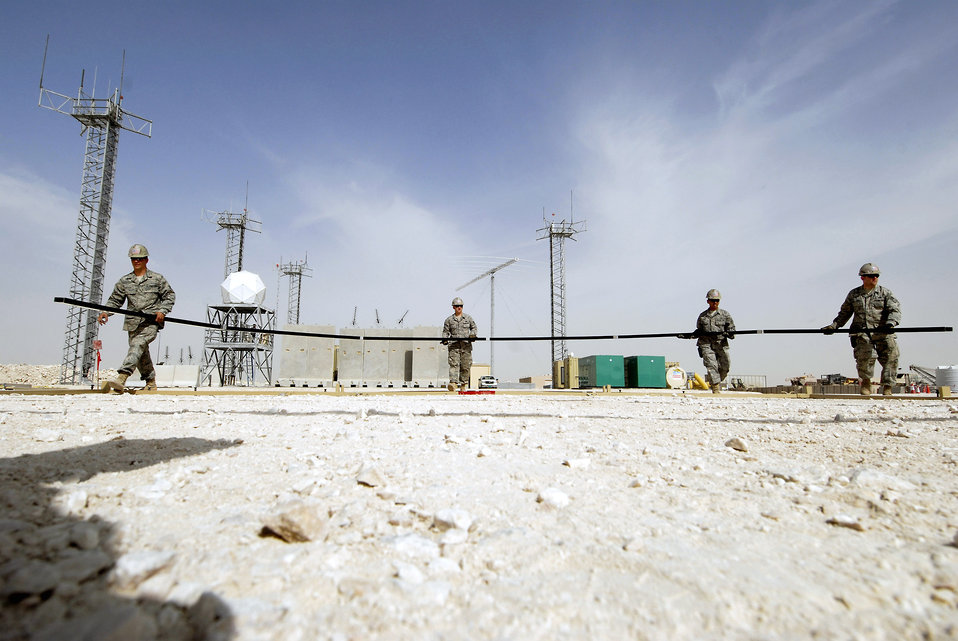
Raising the roof

Structures team members from the 379th Expeditionary Civil Engineer Squadron move the first arch into position Feb. 17 to build a California Medium Shelter System to house Airmen at an air base in Southwest Asia.